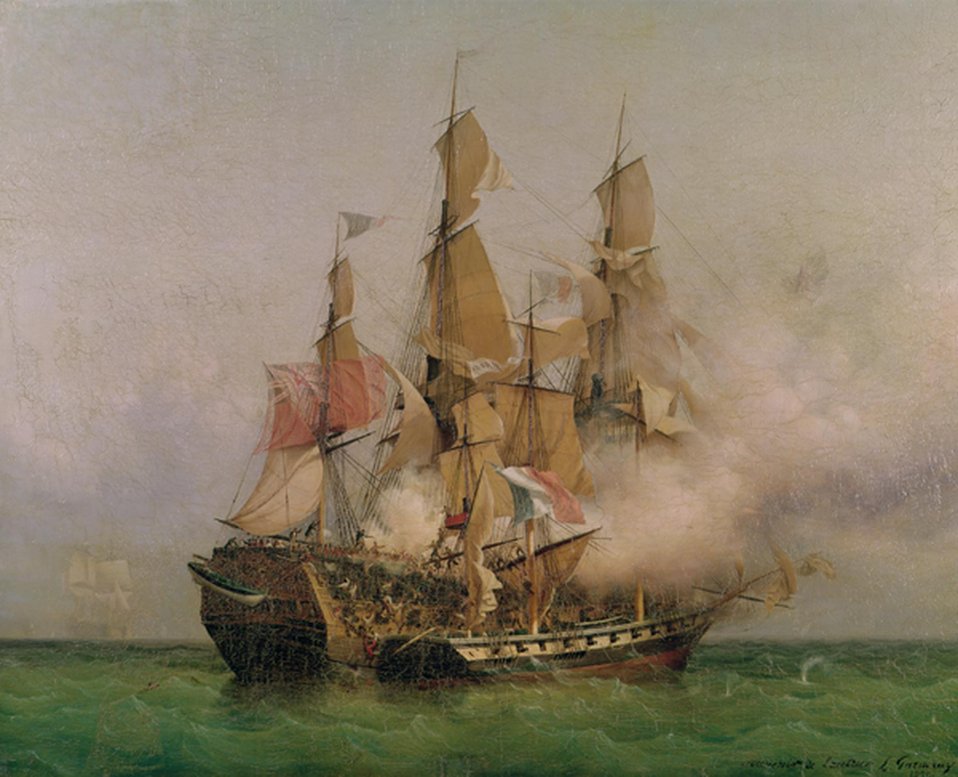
Ambroise-Louis Garneray - The Taking of the 'Kent' by Robert Surcouf in the Gulf of Bengal